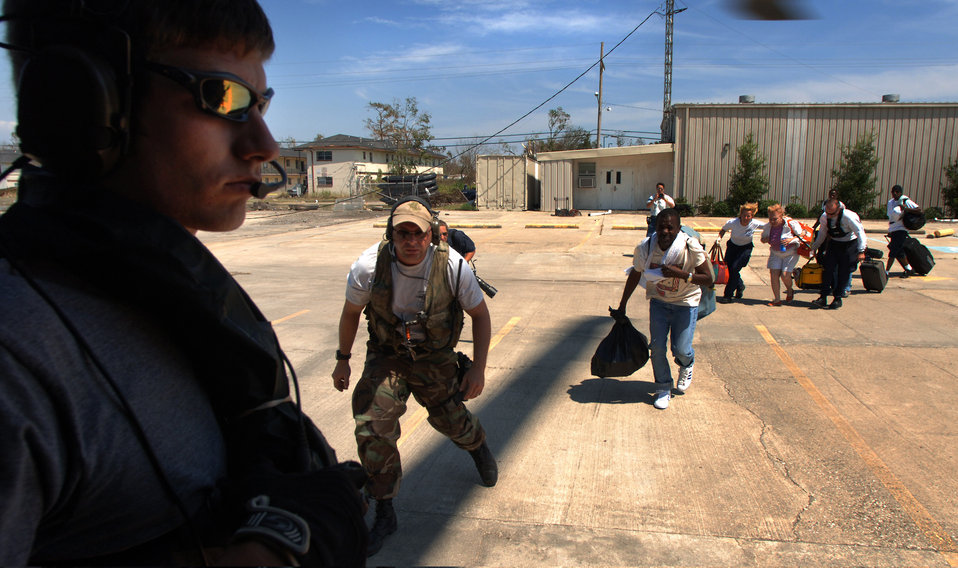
Helicopter mission changes as rescue tempo slows

NEW ORLEANS -- An Air Force pararescueman helps load evacuees aboard an HH-60G Pave Hawk helicopter from the 38th Rescue Squadron at Moody Air Force Base, Ga. The unit is part of the deployed 347th Expeditionary Airlift Group in Jackson, Miss. The helicopter took the evacuees to the New Orleans airport from where they will go to a relocation center somewhere in the United States. Helicopter aircrews have been rescuing people since the day after Hurricane Katrina hit the Gulf Coast.